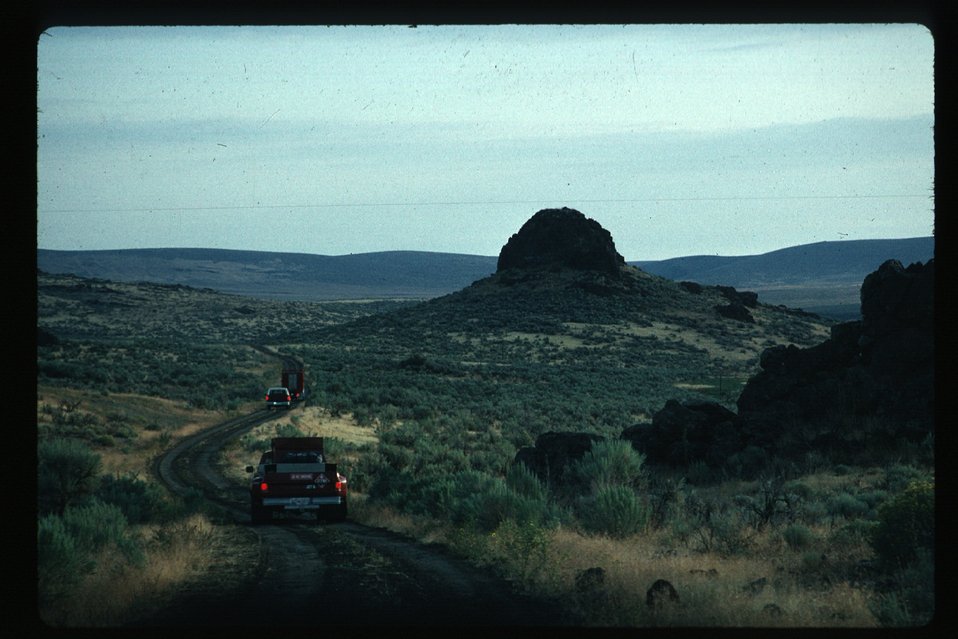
Wild Horse and Burro Gathering or roundup LSRD Lower Snake River District